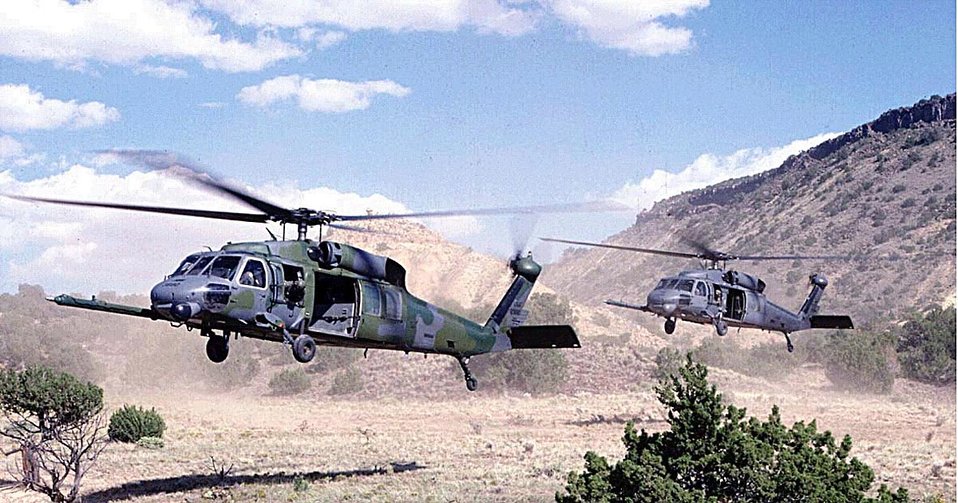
Pave Hawks

FILE PHOTO -- The primary mission of the HH-60G Pave Hawk helicopter is to conduct day or night operations into hostile environments to recover downed aircrew or other isolated personnel during war. Because of its versatility, the HH-60G is also tasked to perform military operations other than war. These tasks include civil search and rescue, emergency aeromedical evacuation, disaster relief, international aid, counterdrug activities and NASA space shuttle support.